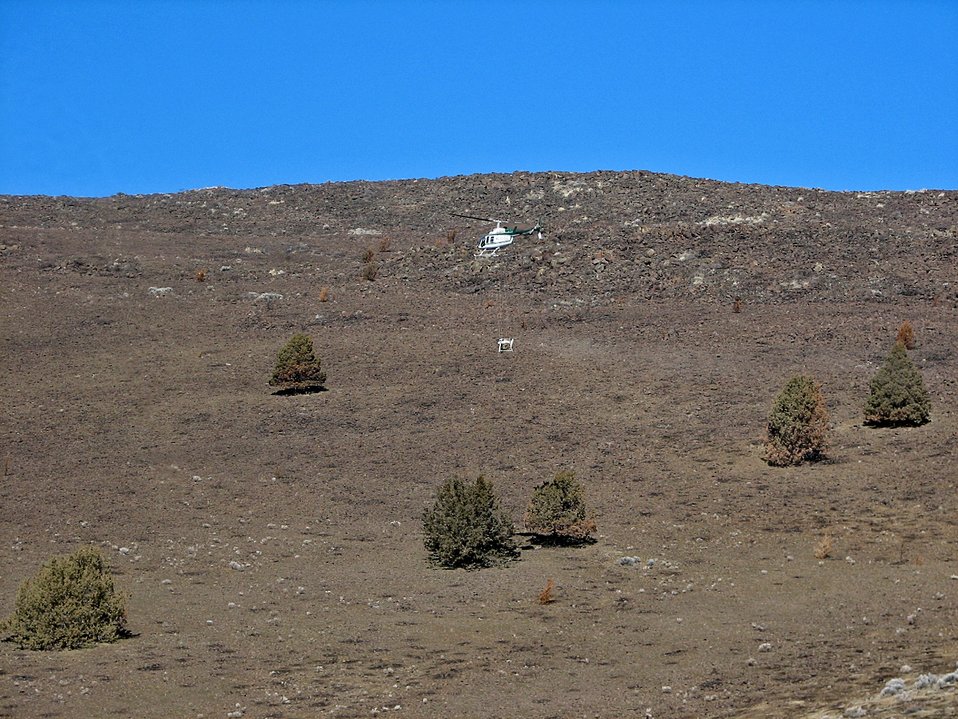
Approximately 400 acres of the Klamath Hills wildfire south of Klamath Falls were reseeded with native grasses, forbs, and shrubs.